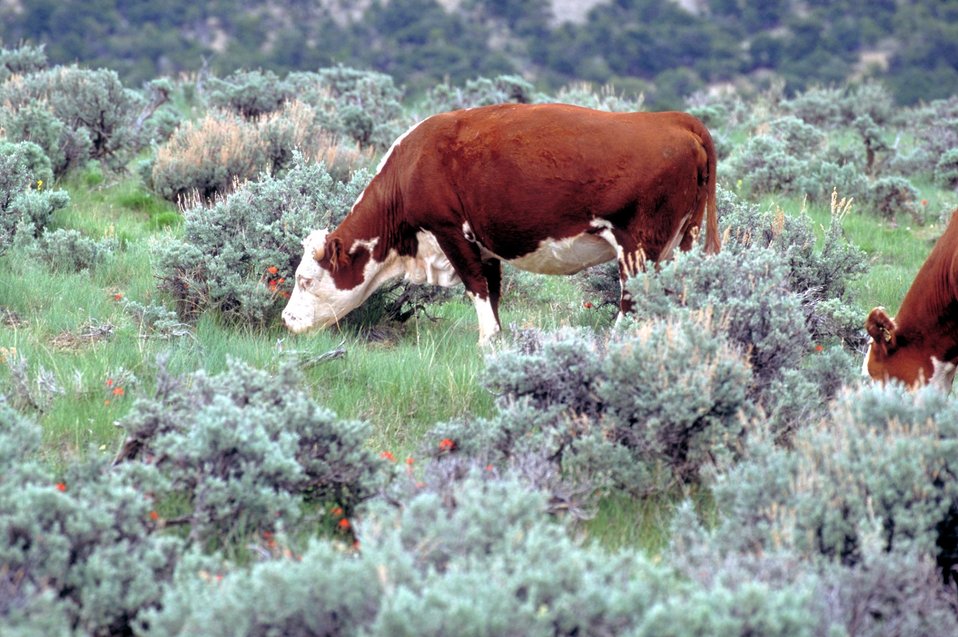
Livestock grazing on BLM lands near Price, Utah.